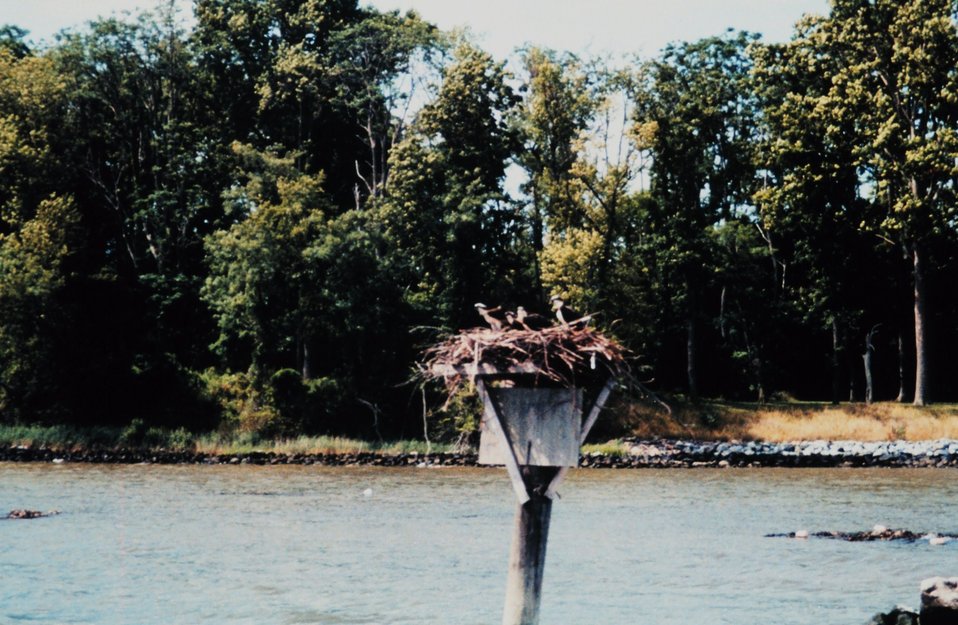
Four osprey - Pandion haliaetus - on nest off of the University of Maryland Horn Point Environmental Laboratory on the Choptank River.